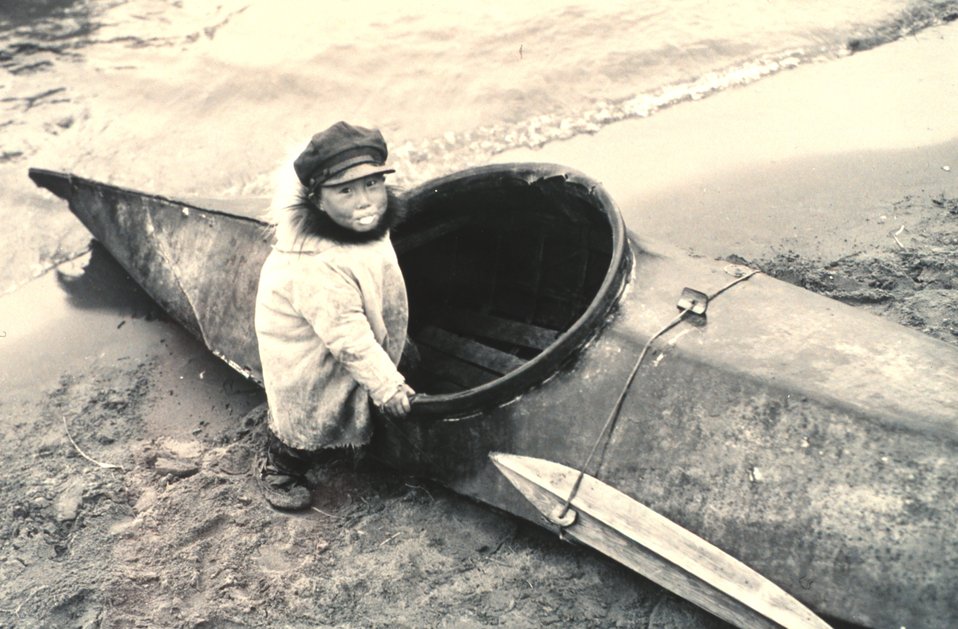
This youngster wanted to grow up and be just like Dad. An Eskimo toddler dreams of hunting on the Bering Sea with his father. F&WS 1166.